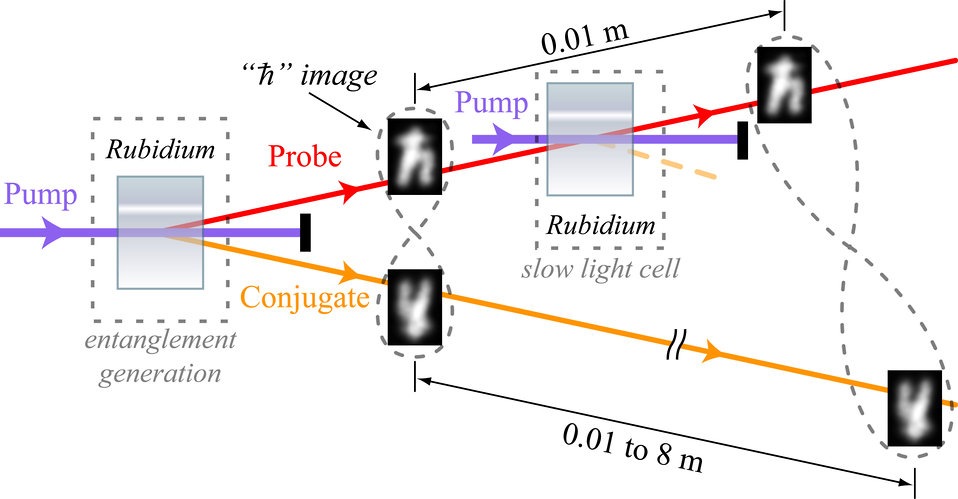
Quantum buffer

In this simplified representation of the experimental setup for a 'quantum buffer,' a cell containing rubidium gas is used to produce a pair of information-rich entangled images. One of the images goes through a second rubidium gas cell and slows down, which is potentially useful for feeding data at properly timed intervals to future quantum computers. The delay can be controlled such that, during the time it takes one image to travel a centimeter, the other image can travel up to 8 meters. The twisted loops illustrate the entanglement between the images.